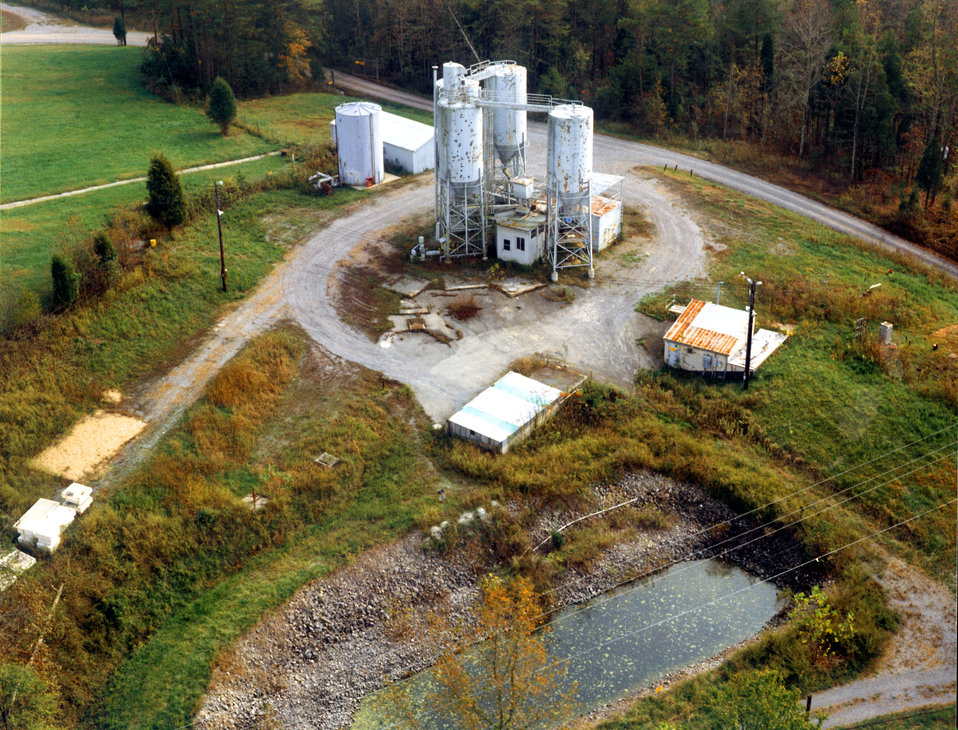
1984

Hydrofacture